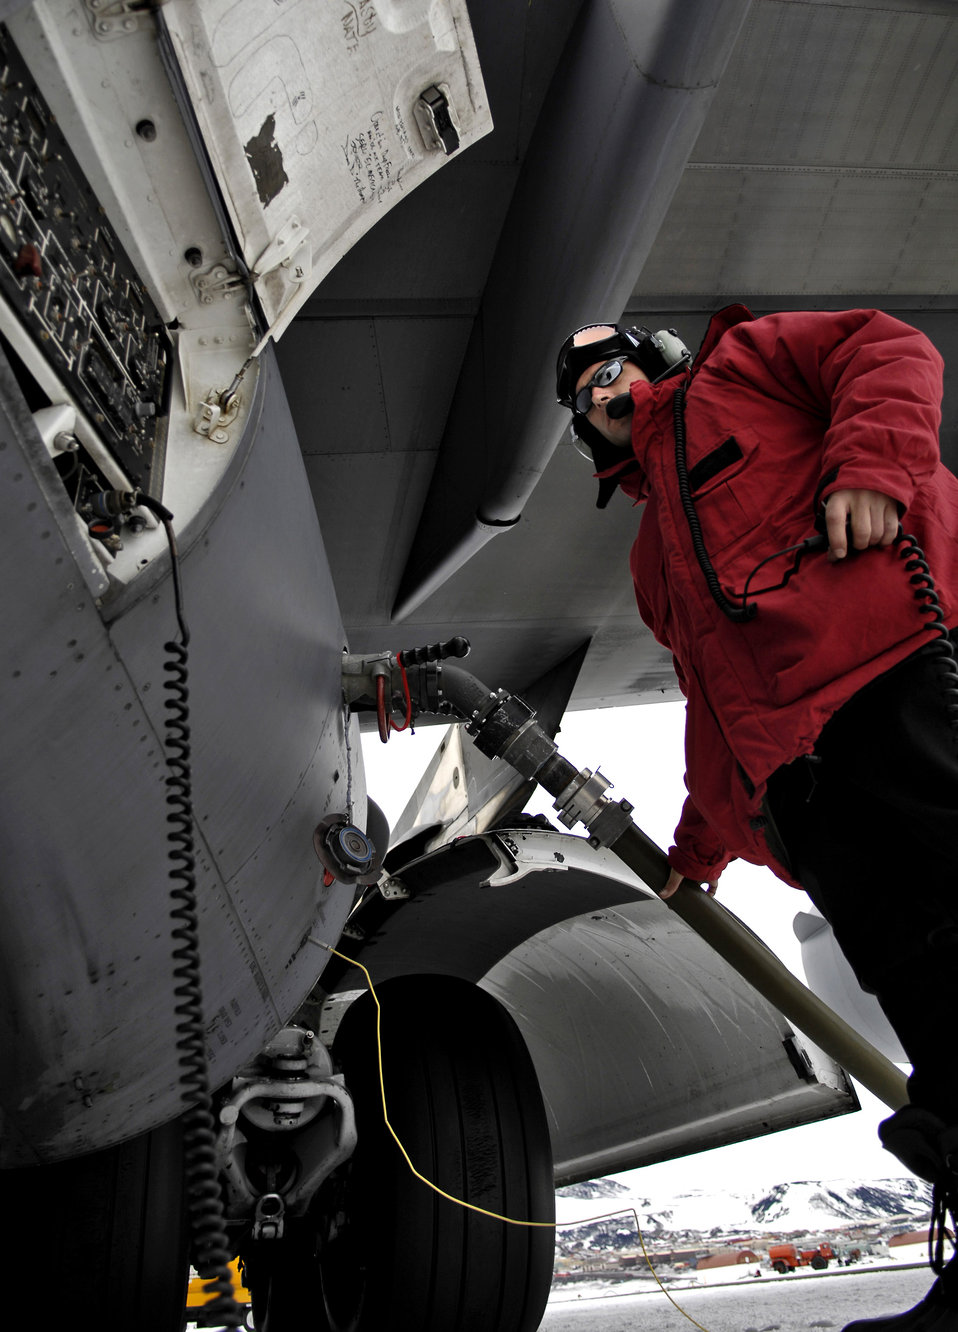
Guardsmen support Operation Deep Freeze

Tech. Sgt. Rob Veitz refuels a C-17 Globemaster III Nov. 22 at McMurdo Station, Antarctica. Reserve and active duty Airmen from McChord Air Force Base, Wash., are staging at Christchurch, New Zealand, to support the 13th Air Force-led Joint Task Force Support Forces Antarctica's Operation Deep Freeze.